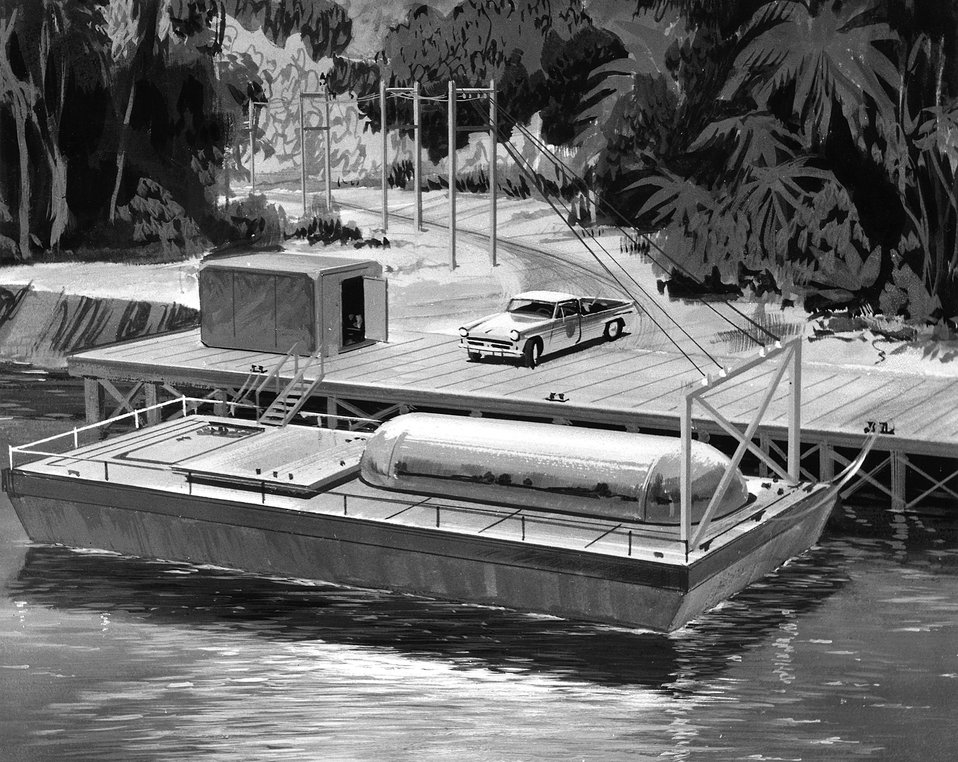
A compact nuclear reactor powered SNAP unit mounted on a barge is shown in this artist's conception.